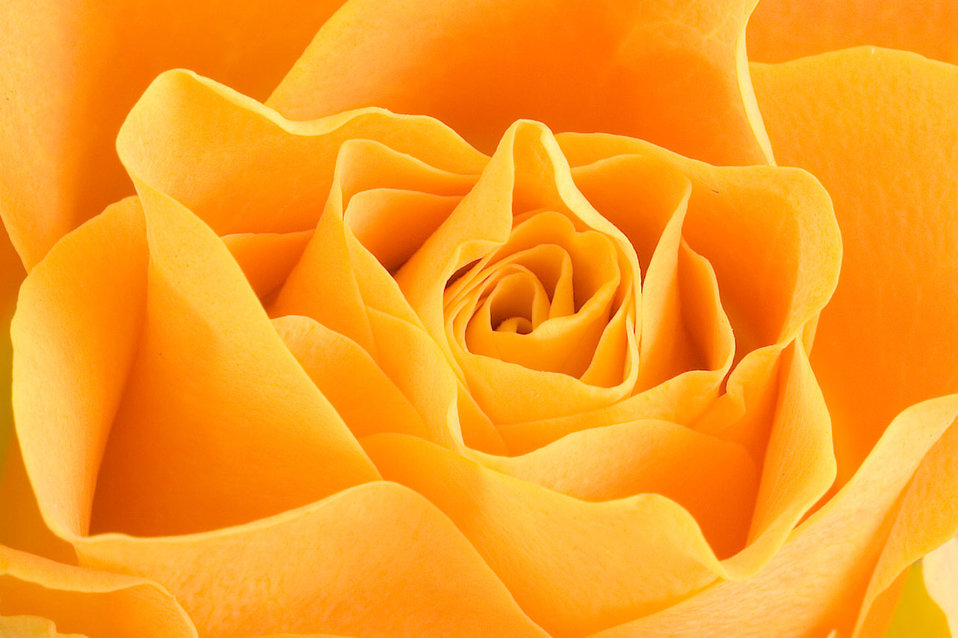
Rose

A macro photo of a yellow rose.